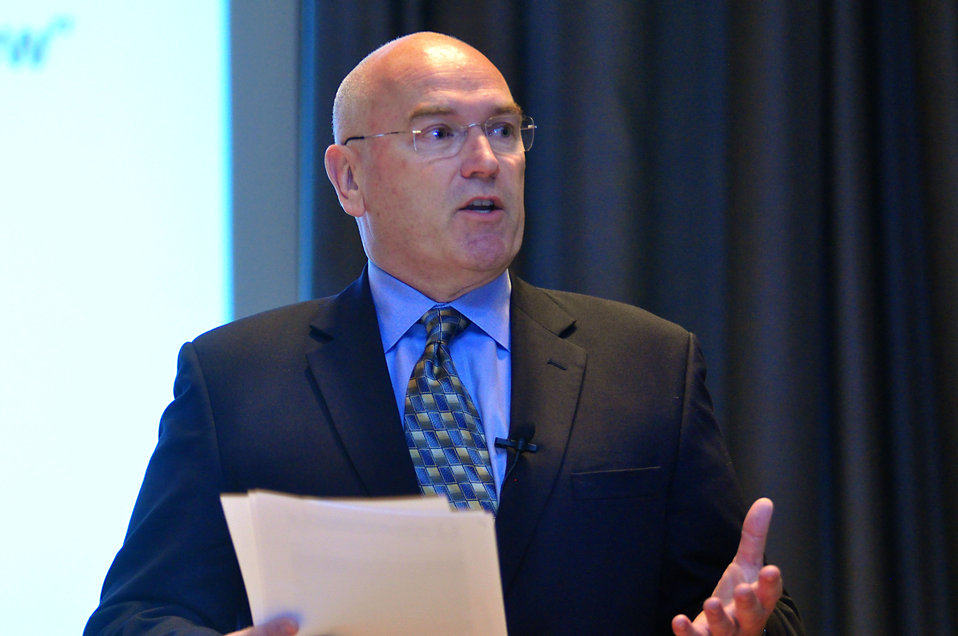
Jeff Miller ORAU Senior Scientist Oak Ridge Business Safety Partnership UPF 2014 Oak Ridge

14-042 DOE photo Lynn Freeny 4-2-2014 Oak Ridge Tennessee